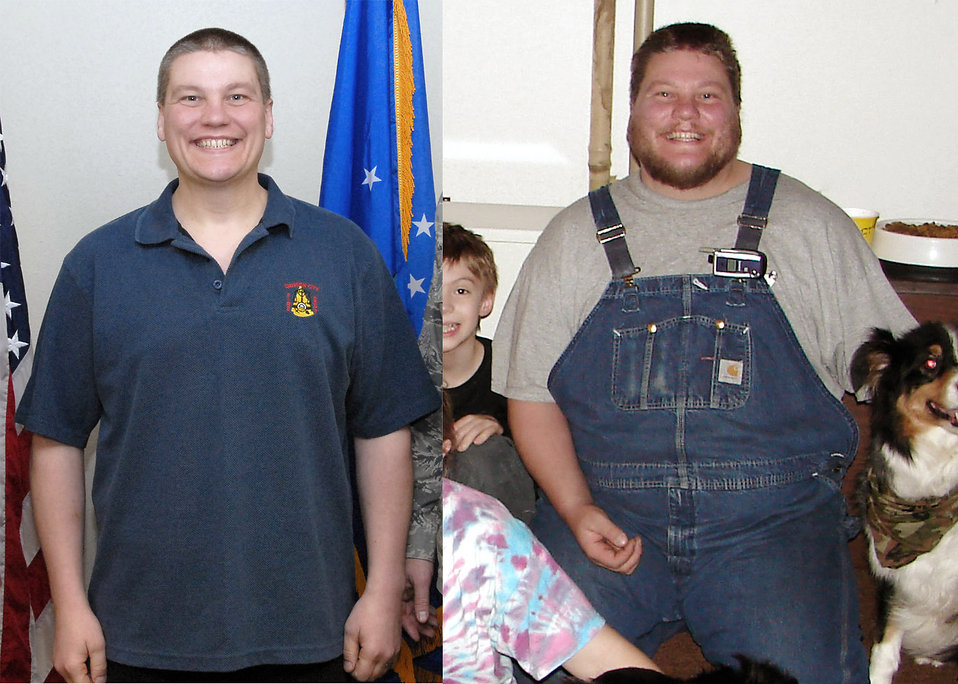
Airman sheds 115 pounds to work on F-22s in Alaska

Derrick Bell shed more than 115 pounds to meet the Air Force Reserve physical standards of enlistment. Airman Bell, a 38-year-old, husband and father of two, enlisted in the Air Force Reserve Jan. 15 at Elmendorf Air Force Base, Alaska.